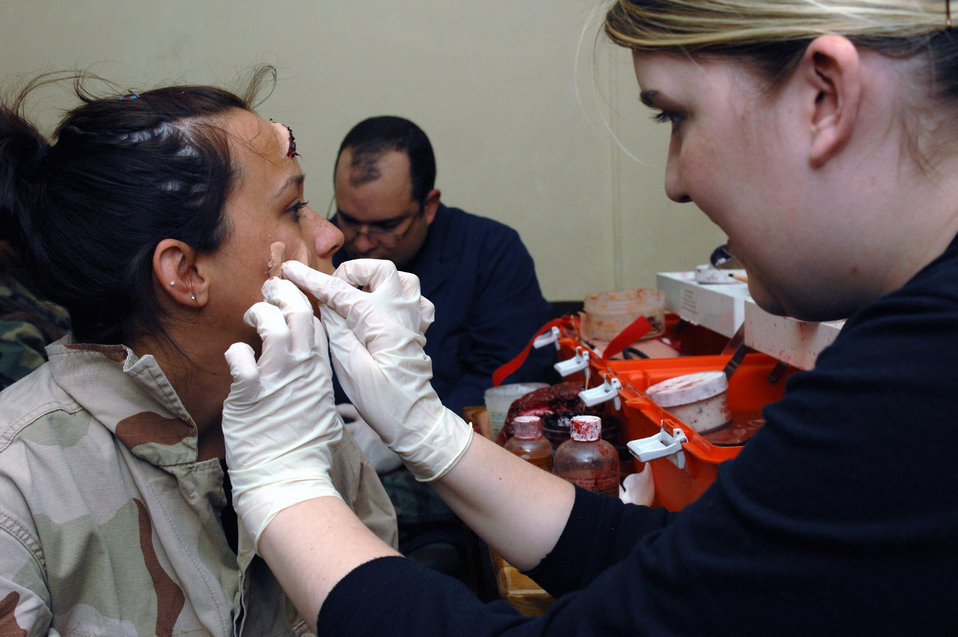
Blood, guts and moulage

Senior Airman Bridget Borseth applies a facial laceration moulage on Megan Caberto April 22 during Exercise Saber Crown 08-06 at Spangdahlem Air Base, Germany. The moulage helps make crises exercises more realistic. Airman Borseth is with the 52nd Dental Squadron. Miss Caberto is the daughter of Col. Steven Caberto, 52nd Medical Group deputy commander.